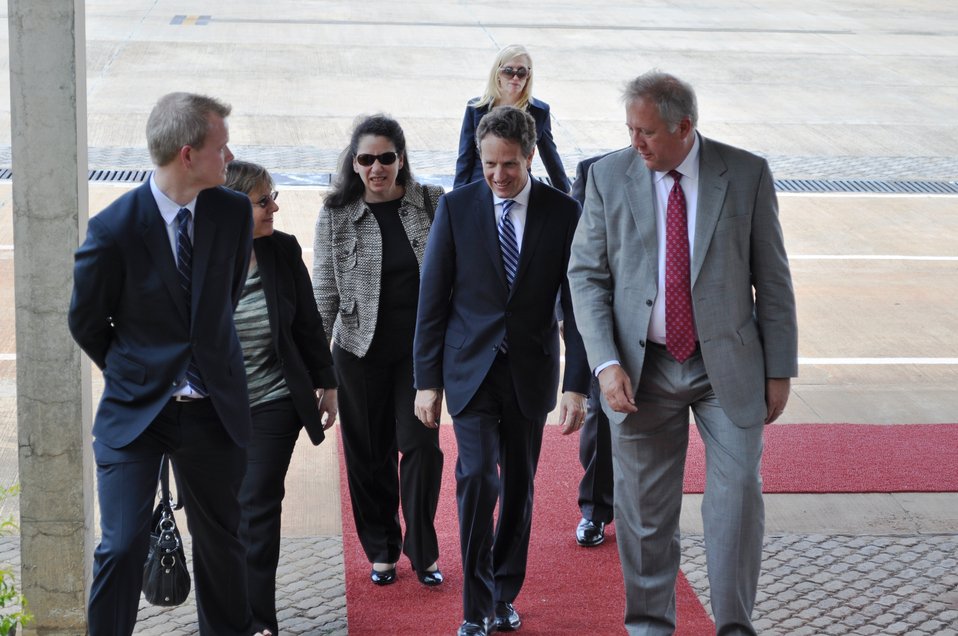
Secretary Geithner Travels to Brazil, 02/07/2011

Arriving in Brasilia, Brazil.